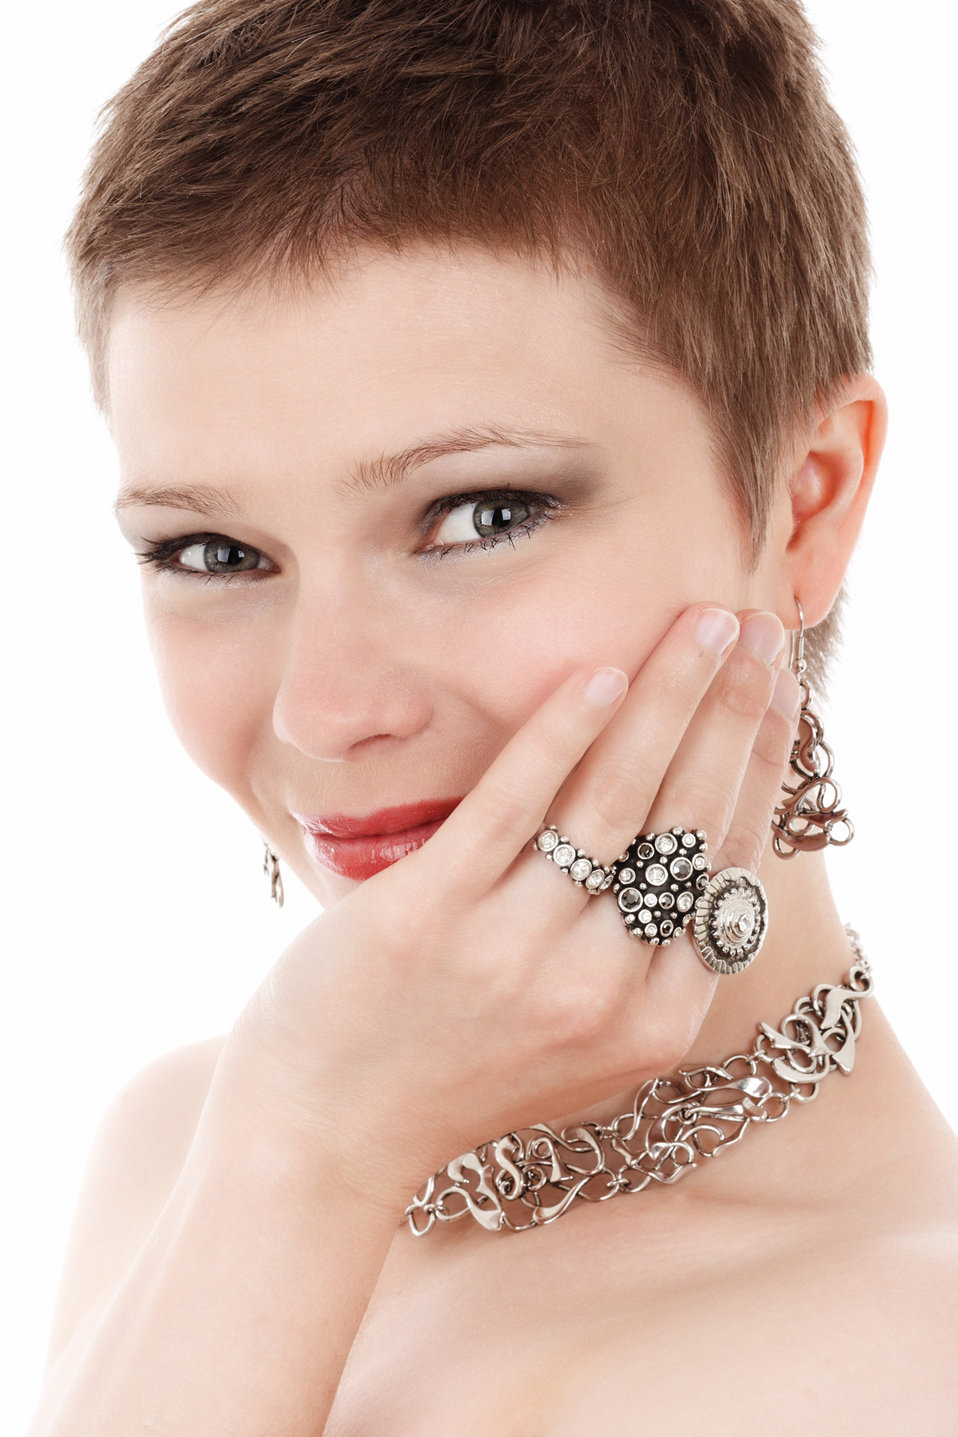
Beauty portrait

Female beauty portrait.